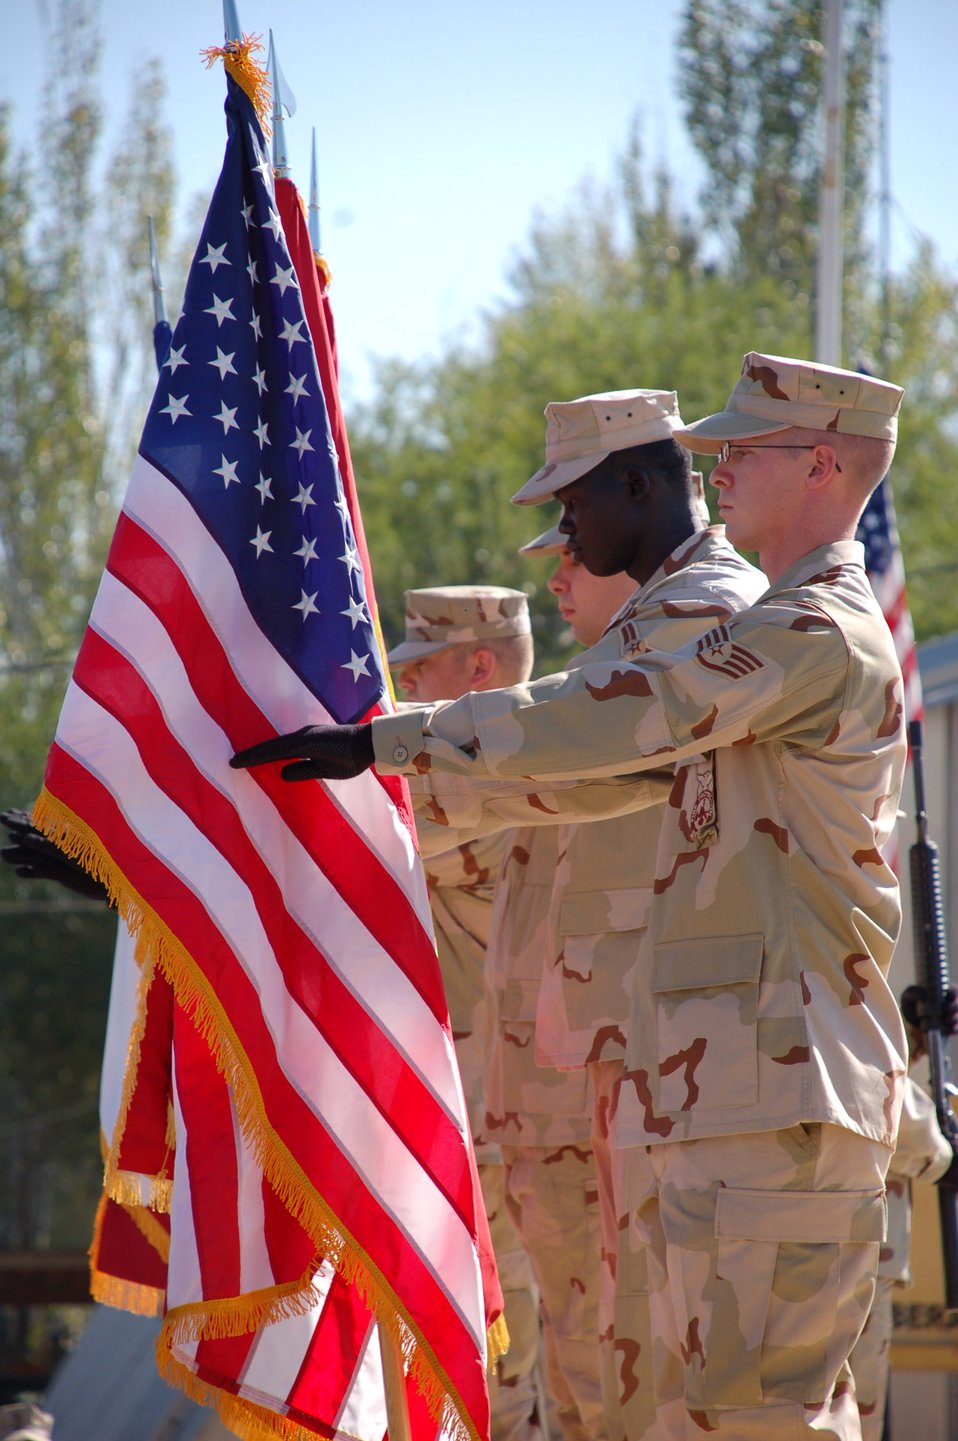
Manas Airmen remember Sept. 11

The Manas Air Base color guard post the American, Kyrgyz, Spanish and French flags during the Sept. 11 remembrance ceremony at Manas AB, Kyrgyzstan. Distinguished visitors from the United States Embassy, including the U.S. ambassador, attended along with dignitaries from the Ministry of Defense and the Manas International Airport where the base is located. Manas AB opened two months after Sept. 11, 2001, and served as a staging base for initial support for Operation Enduring Freedom. Today the base is the premier logistics hub for continued operations in Afghanistan.